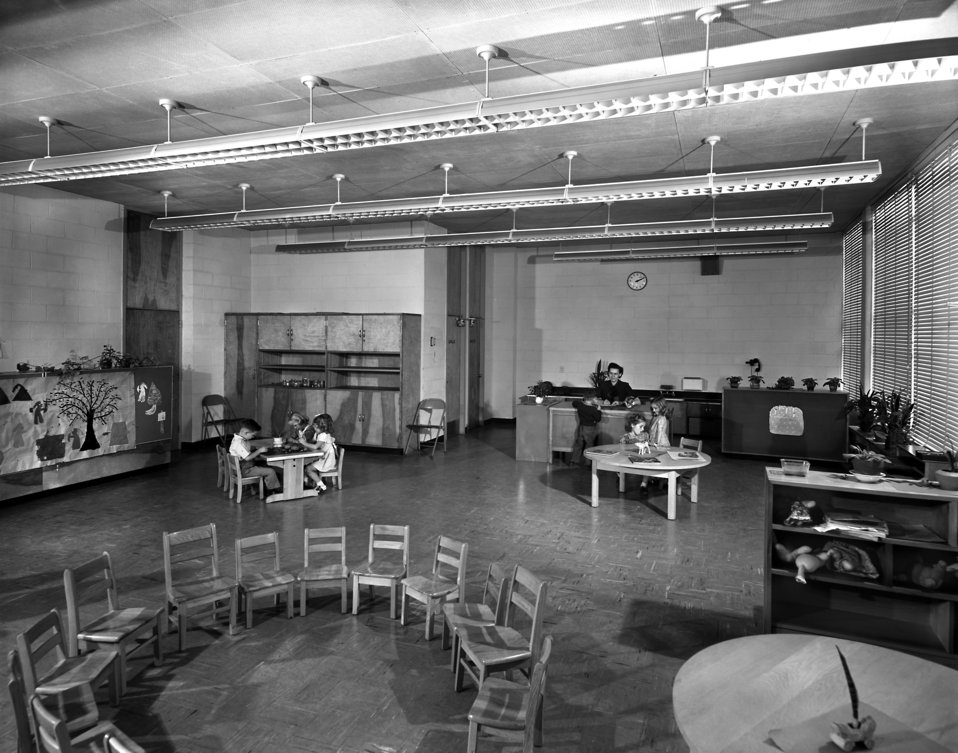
Willow Brook School Oak Ridge 1949

5763-6d DOE Photo Ed Westcott 11-29-1949 Oak Ridge Tennessee